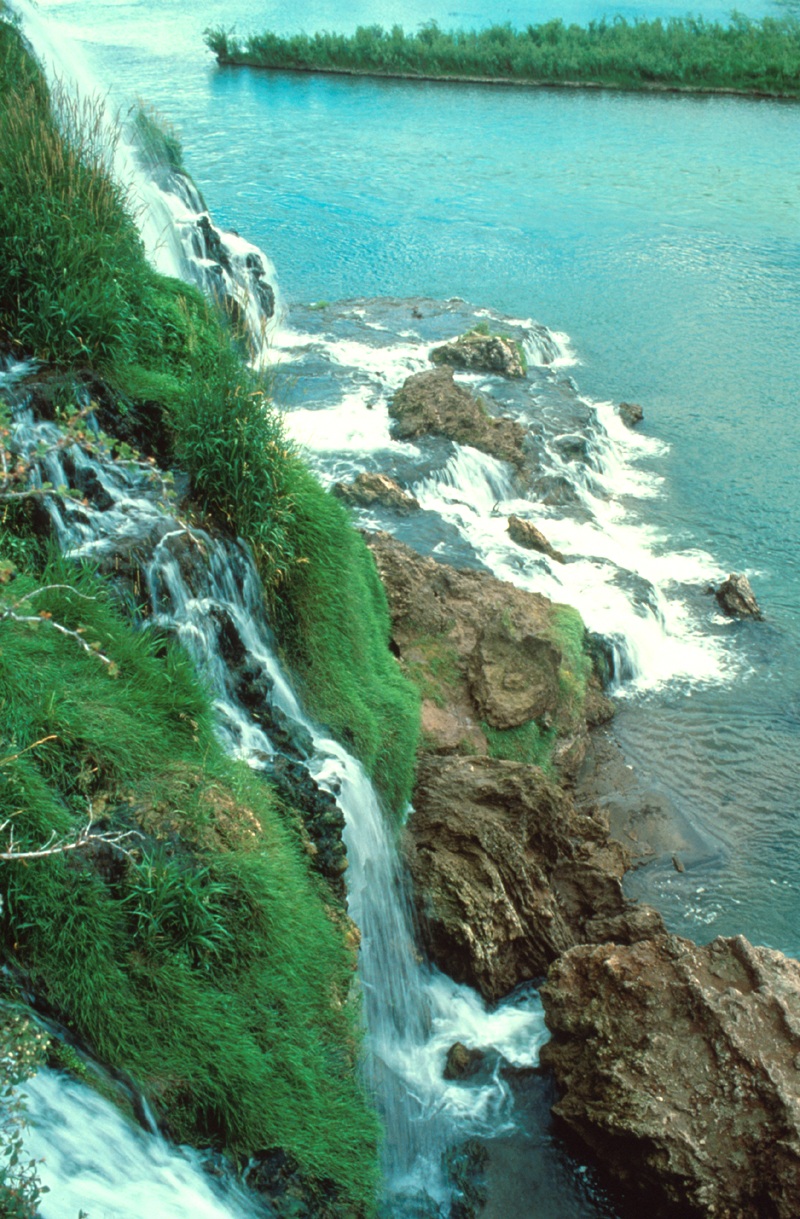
Fall Creek Falls Snake River Canyon Upper Sanke River District